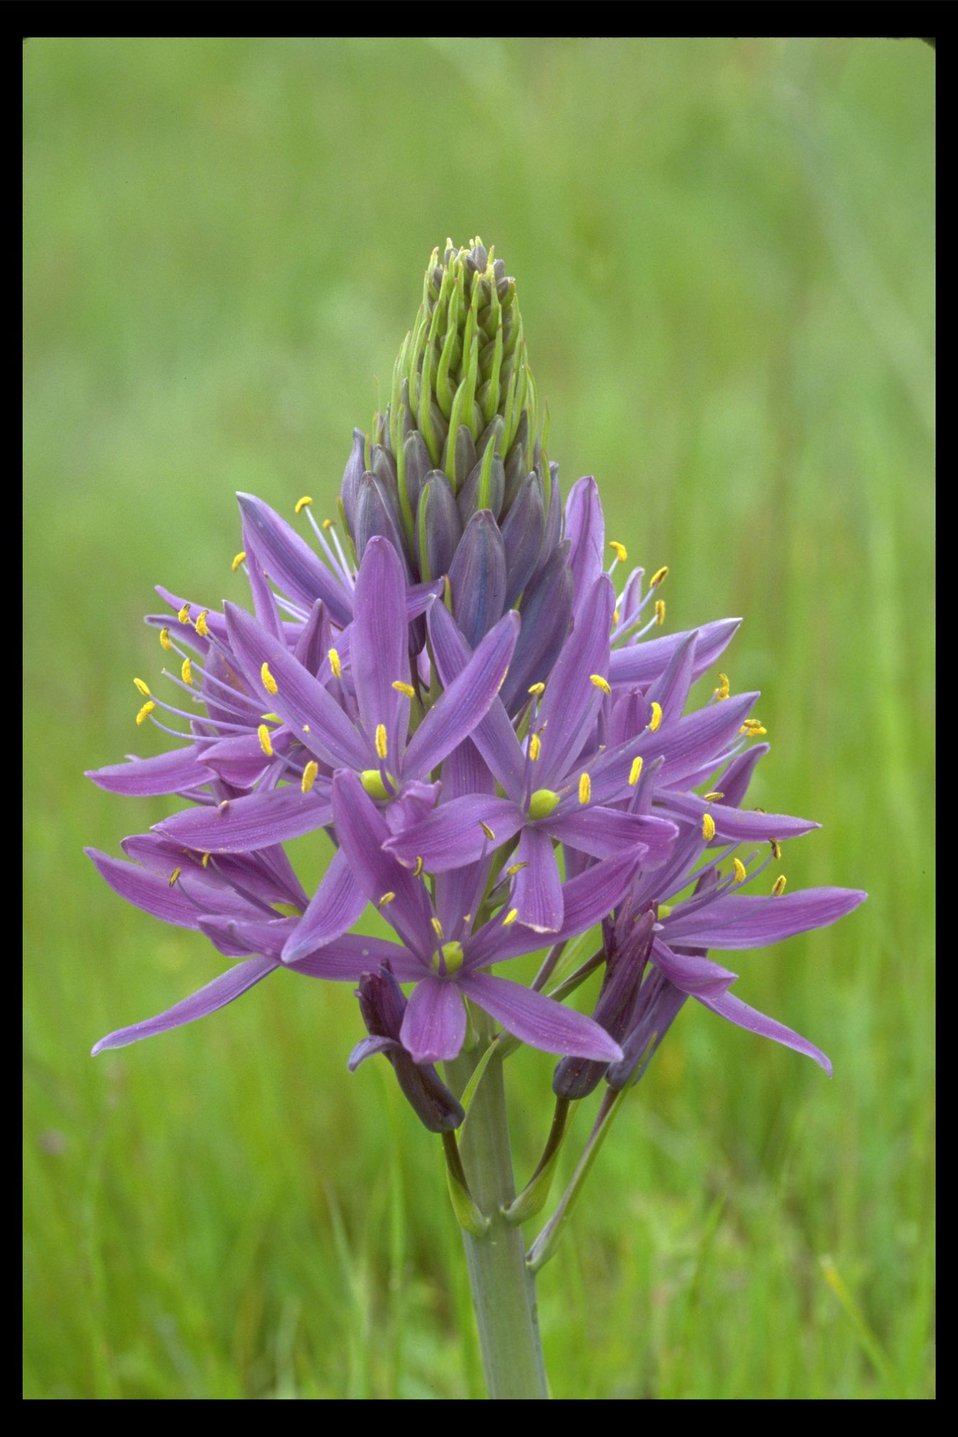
Common Camas (Camassia quamash) at Shady Cove.